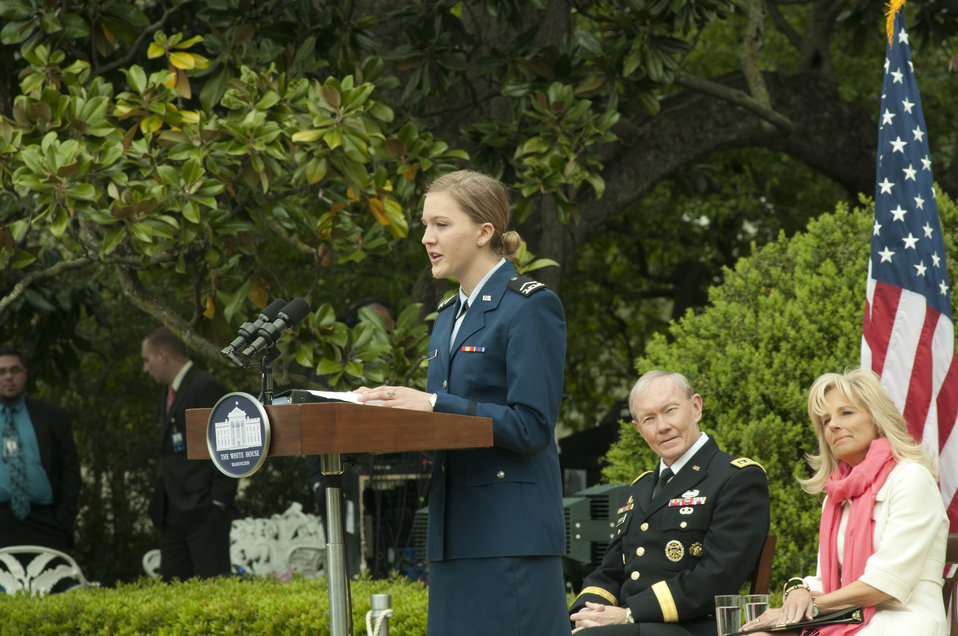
White House marks first Joining Forces anniversary

Cadet Staff Sgt. Moranda Hern, Air Force Academy sophomore, speaks as Chairman of the Joint Chiefs of Staff U.S. Army Gen. Martin E. Dempsey; Jill Biden, the vice-president’s wife; First Lady Michelle Obama; and Tom Brokaw, television journalist, listen at the first anniversary of Joining Forces ceremony on the south lawn of the White House April 11, 2012. Hern was one of the 20 finalists in the Joining Forces Community Challenge that recognized citizens, communities and organizations for their efforts in supporting military families. . Hern started the Sisterhood of the Traveling BDUs organization that aims to help daughters ages 13-18 of military members connect and build relationships. The challenge was part of the Joining Forces program, pioneered by First Lady Michelle Obama and Jill Biden, which is a national initiative that mobilizes all sectors of society to support military members and their families.